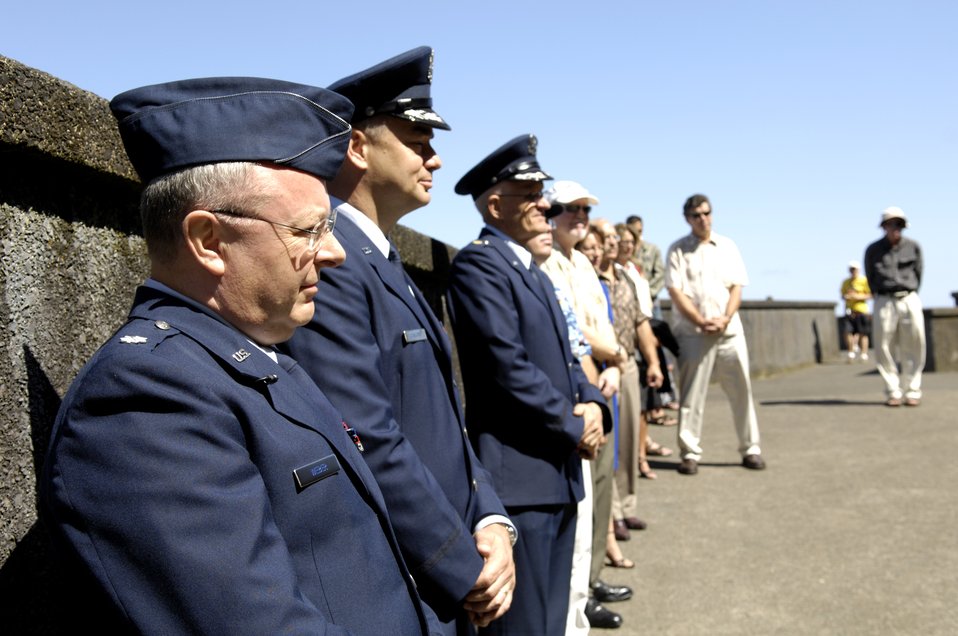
B-17 crew remembered

Hickam Air Force Base Airmen and Hawaii Aviation Preservation Society members listen to a speech during a memorial ceremony at Nu'uanu Pali Lookout, Hawaii April 5, 2007. Airmen and HAPS members held a memorial and dedicated a plaque for 10 crew members of a B-17E Flying Fortress that crashed into the cliffs of Mt. Keahiakahoe 65 years ago.